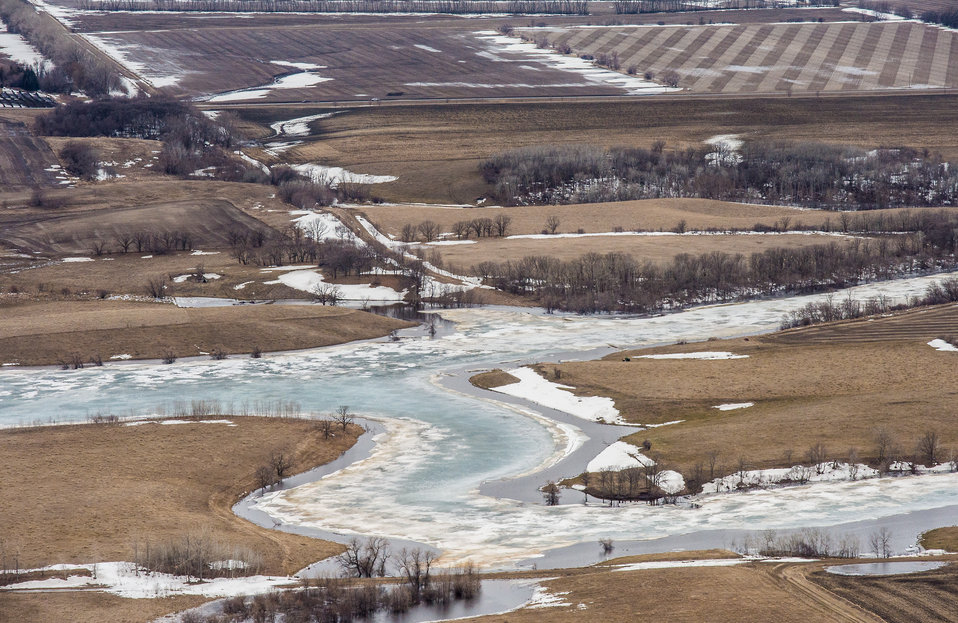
Tongue River Watershed dam T-2-2, Weiler Dam, in Pembina County, ND, part of the Red River basin, on Wednesday, May 1, 2013. To learn about the Red River Basin Initiative, see www.mn.nrcs.usda.gov/news/features13/RRBI.html.